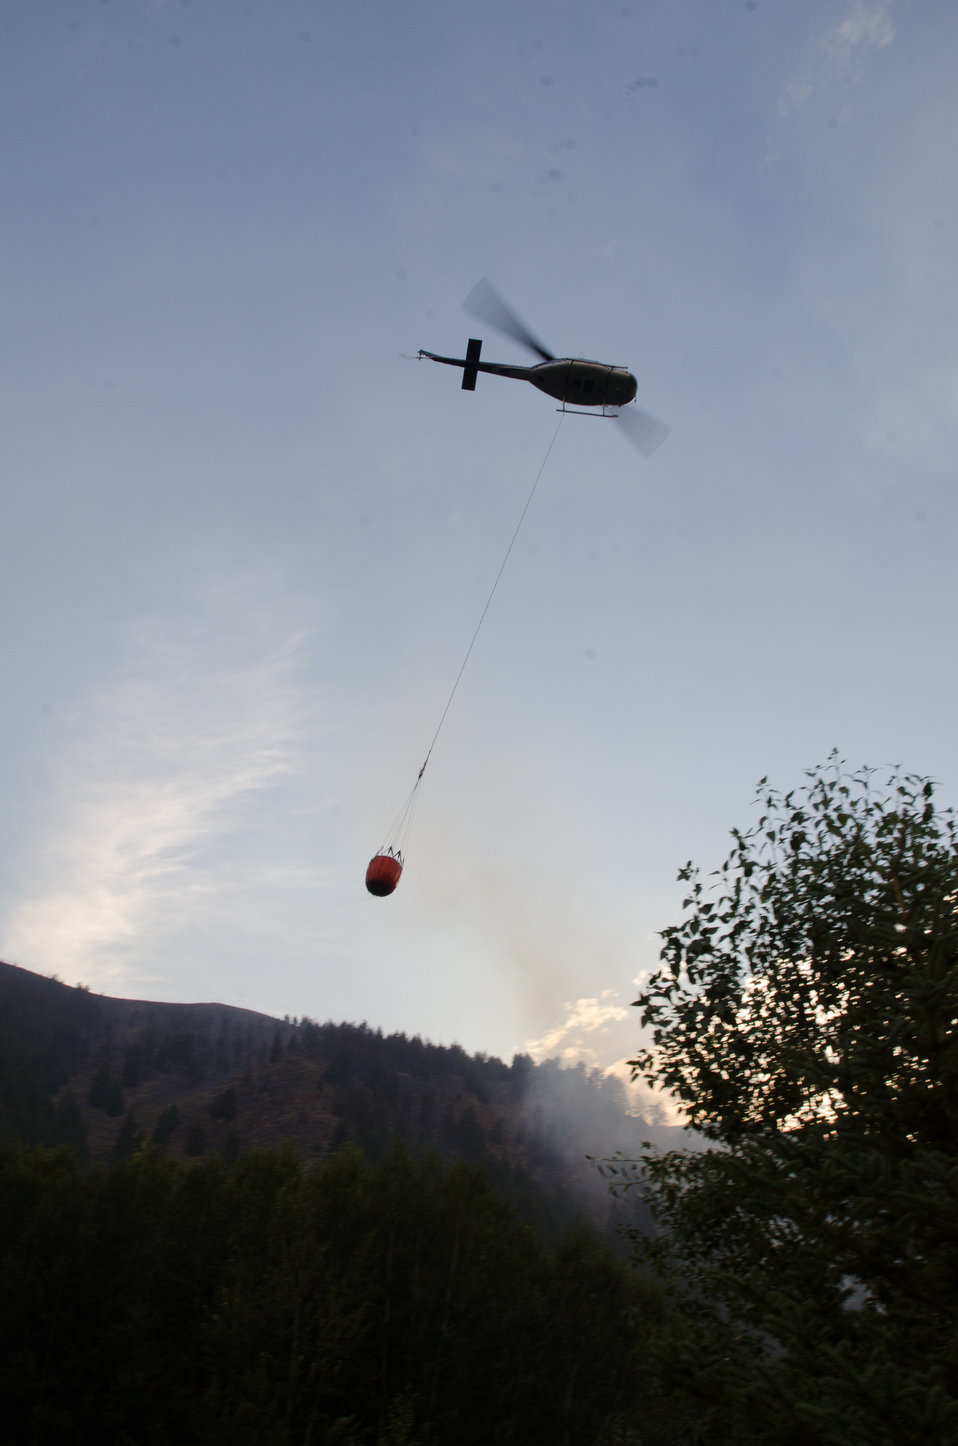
A Bell UH-1H helicopter lifts a full Bambi Bucket, a collapsible bucket utilizing a pilot-controlled release valve, that is able to deliver a concentrated column of water from the helicopter to the fire on the Carbonate Ridge, rising behind the Wood River, during Beaver Creek Fire,west of Hailey, ID, on Monday, Aug 19, 2013.